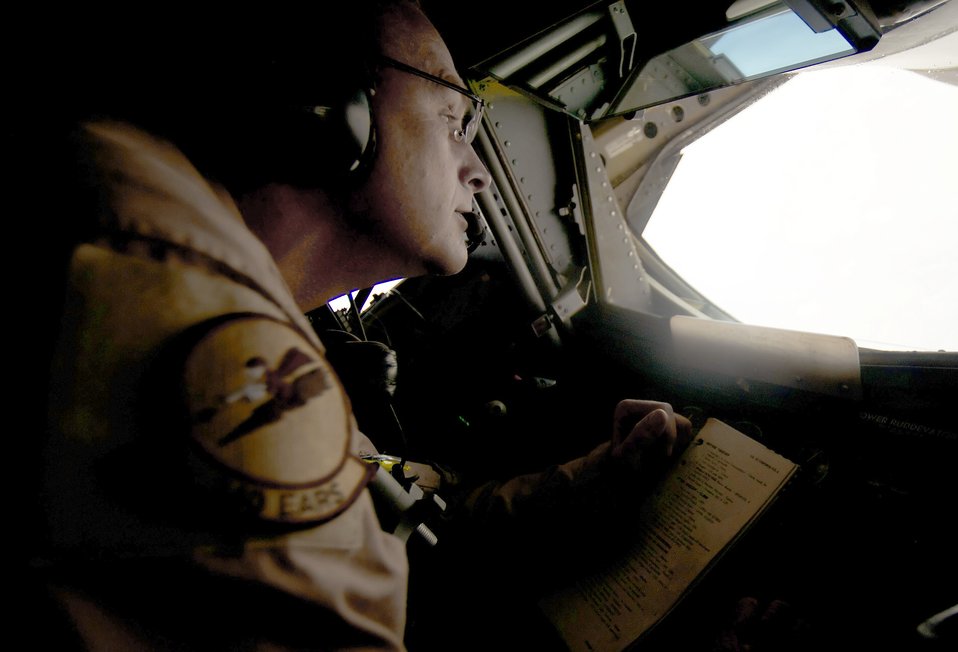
Operation New Dawn

Senior Master Sgt. Patrick Sosinski watches from a KC-135 Stratotanker as an aircraft moves into position for refueling Feb 26, 2011, above Iraq, in support of Operation New Dawn. Sergeant Sosinski is a boom operator assigned to the 340th Expeditionary Air Refueling Squadron.